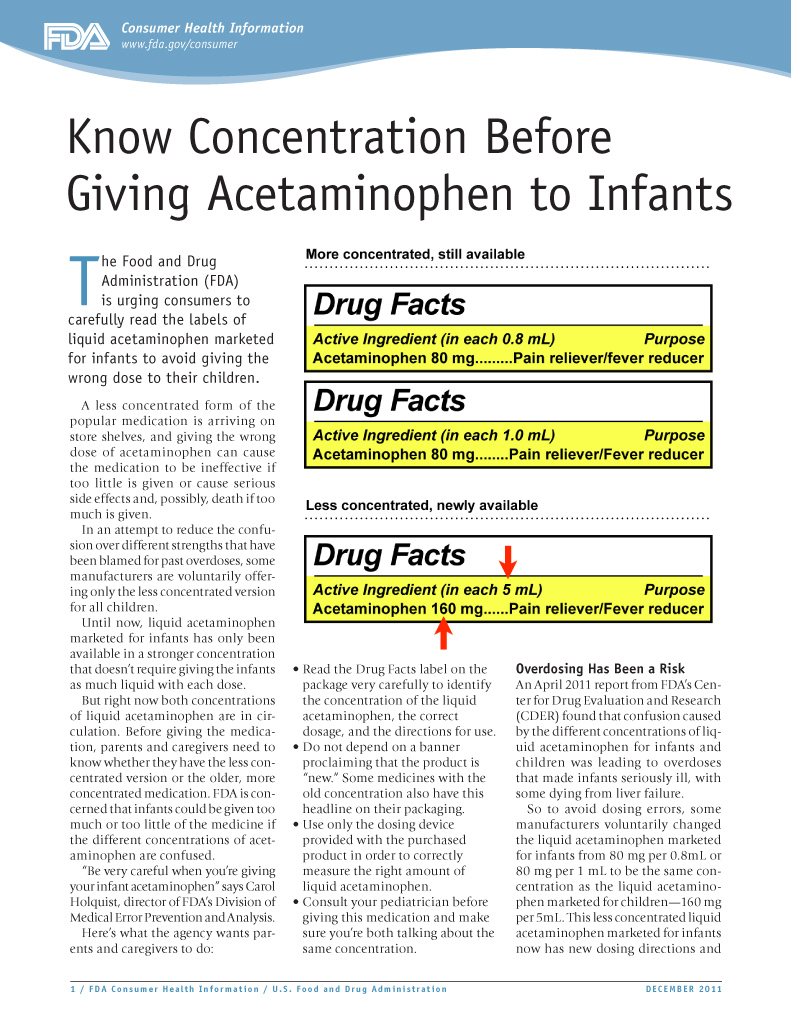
Know Concentration Before Giving Acetaminophen to Infants

FDA is urging consumers to examine the labels of liquid infant's acetaminophen to avoid giving the wrong dose as a less concentrated form of the popular medicine arrives in stores. Read this FDA Consumer Update: www.fda.gov/ForConsumers/ConsumerUpdates/ucm284563.htm

Consumer Updates are a quick and easy way to pick up important health information for you and your family. For a complete list of Consumer Updates see the Consumer Updates photo set: www.flickr.com/photos/fdaphotos/sets/72157624900896241/.

For the latest Consumer Updates go to: www.fda.gov/forconsumers/consumerupdates